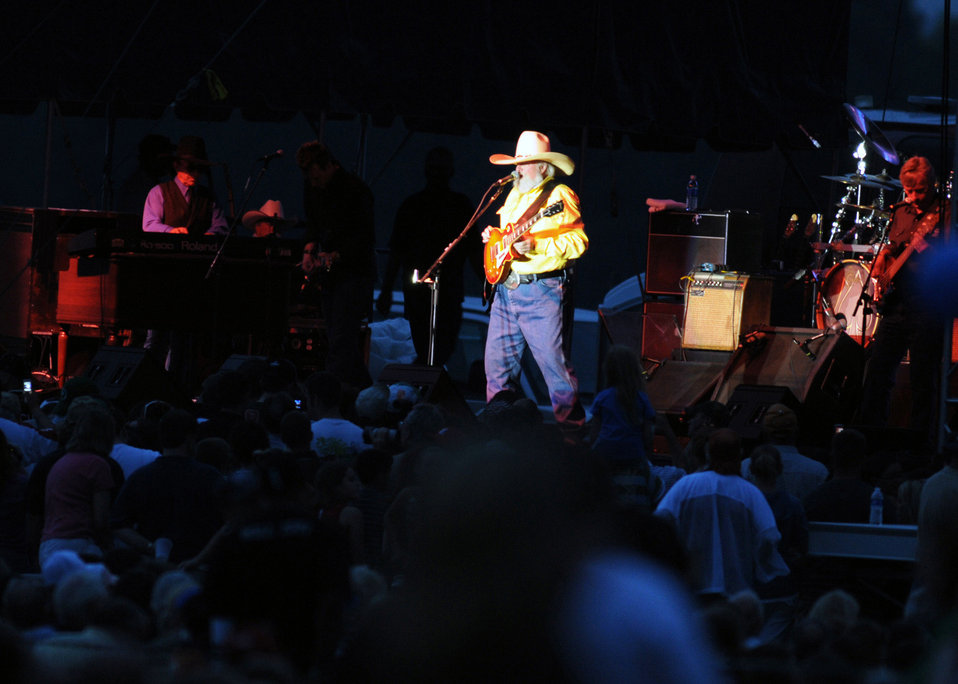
Freedom call

The Charlie Daniels Band performs during the 4th annual Freedom's Call Tattoo June 27 on the grounds of the National Museum of the U.S. Air Force in Dayton, Ohio. More than 75,000 peole came out for the event that consisted of aircraft fly overs, food and music by the Air Force Band of Flight and local performers.